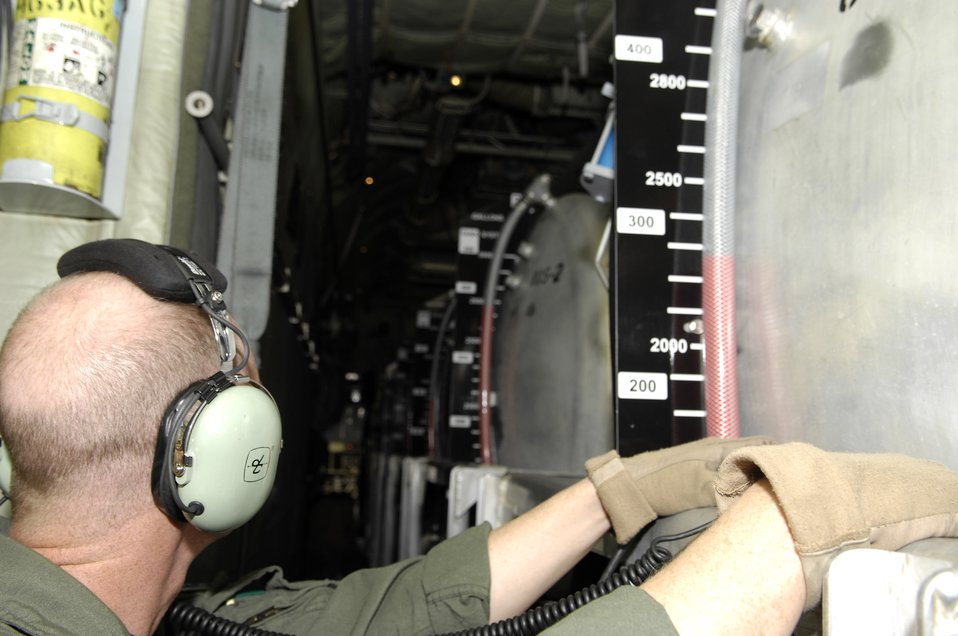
Guard, Reserve aid in California firefighting efforts

Master Sgt. Thomas Freeman monitors the fire retardant levels of the Modular Air Fire Fighting System on a C-130 Hercules as it prepares to launch Oct. 25 from Channel Islands Air National Guard Base, Calif. Sergeant Freeman is assigned to the 302nd Airlift Wing from Peterson Air Force Base, Colo. Air Force Reserve Command and Air National Guard Airmen are participating in the Southern California firefighting effort.